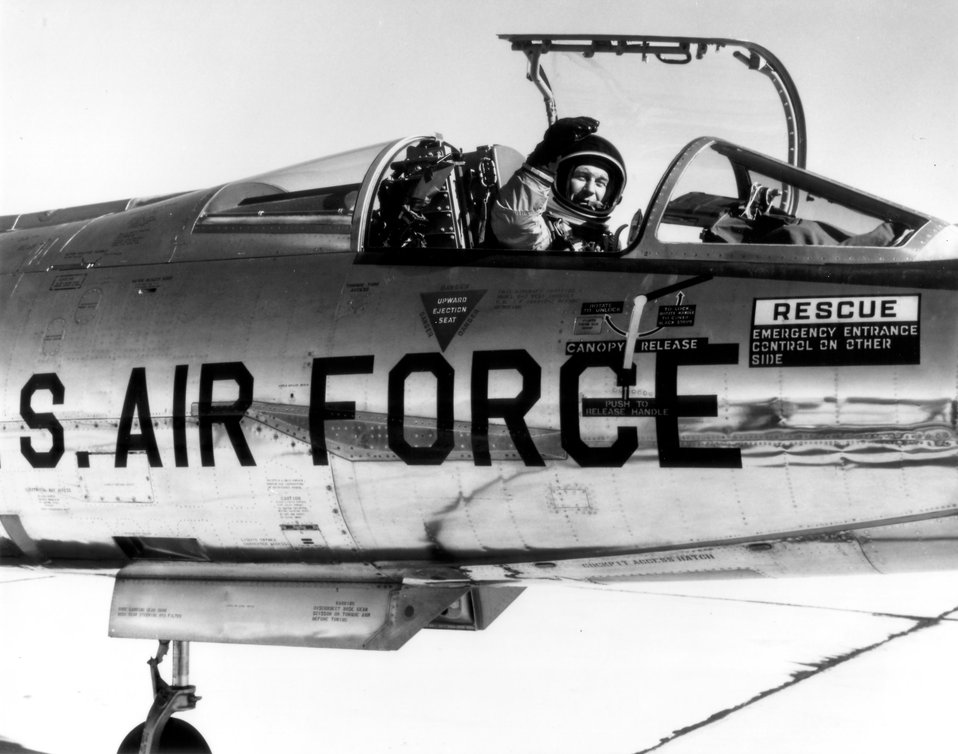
Chuck Yeager, NF-104

1960's -- Chuck Yeager in the cockpit of an NF-104, December 4, 1963.